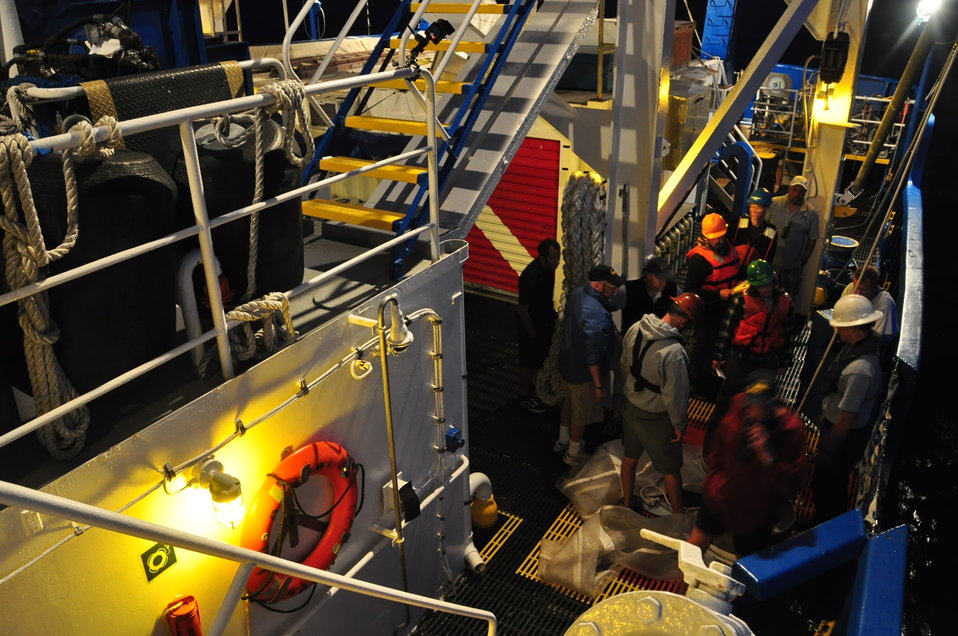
August 5, 2011 Nightfall on the OSV Bold

As night settles in over the ship, you realize just how careful you need to be walking around the equipment!